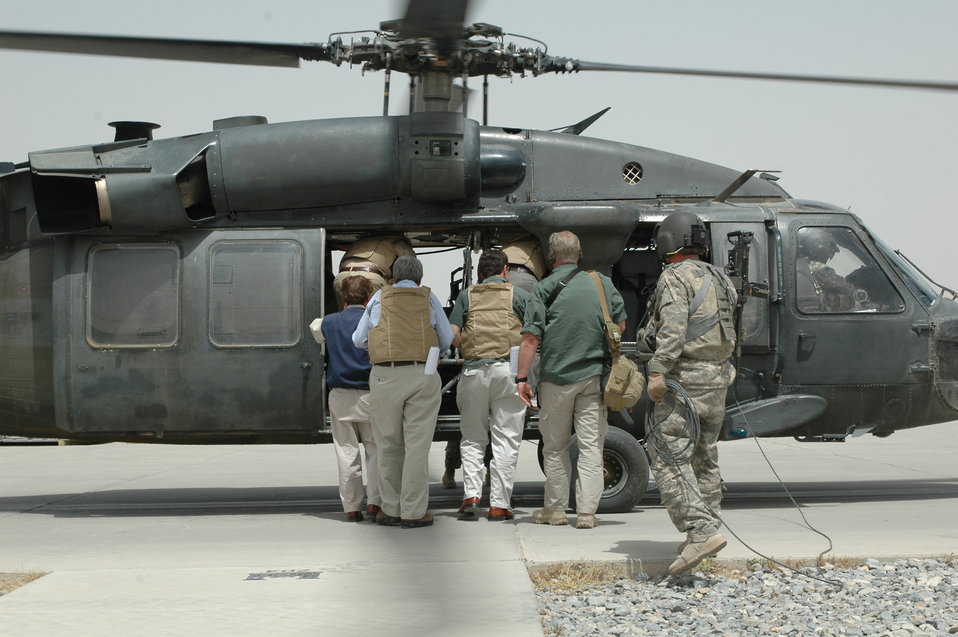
CODEL Berman